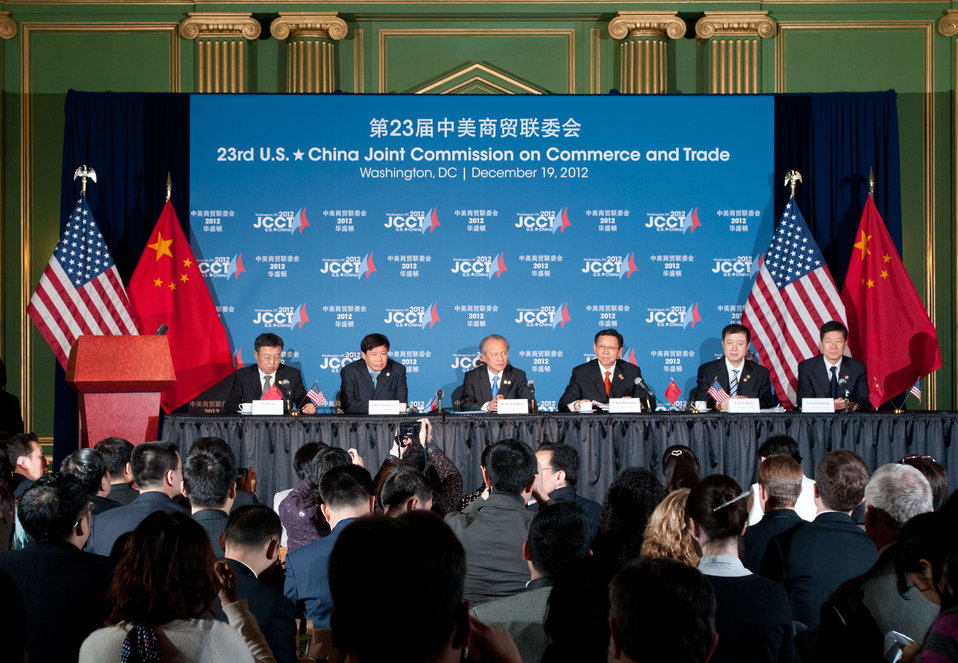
(L to R) China’s Ministry of Foreign Affairs Information Department Deputy Director-General Wu Peng, Vice Minister of Finance Zhu Guangyao, Vice Foreign Minister Cui Tiankai, Minister of Commerce Chen Deming, Vice Minister of Industry and Information Technology (MIIT) Liu Lihua, Vice Minister of National Copyright Administration of China (NCAC) Yan Xiaohong answer questions from international news media journalists at the 23rd Session of the U.S. China Joint Commission on Commerce and Trade (JCCT) press conference, at the Andrew W. Mellon Auditorium in Washington, D.C. on Wednesday, Dec. 19, 2012. The JCCT holds high-level plenary meetings on an annual basis to review progress made by working groups that focus on a wide variety of trade issues. These working groups meet throughout the year to address topics such as intellectual property rights, agriculture, pharmaceuticals and medical devices, information technology, tourism, commercial law, environment, and statistics.